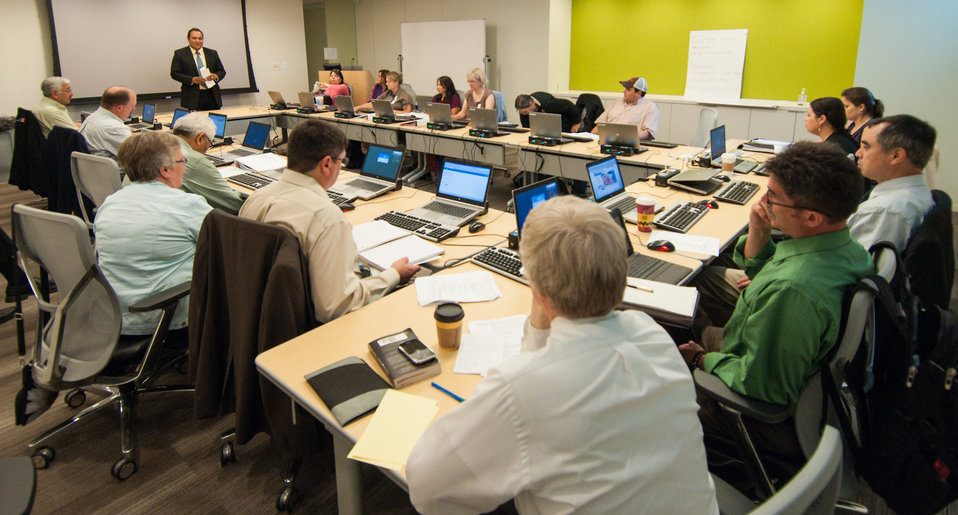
U.S. Department of Agriculture (USDA) 1994 Tribal Land Grant College's and University's Program Director Lawrence Shorty offers opening remarks at the USDA 2013 Land-Grant Development Tribal Fellows Program held in Washington, D.C. on Monday, Jun. 03, 2013.